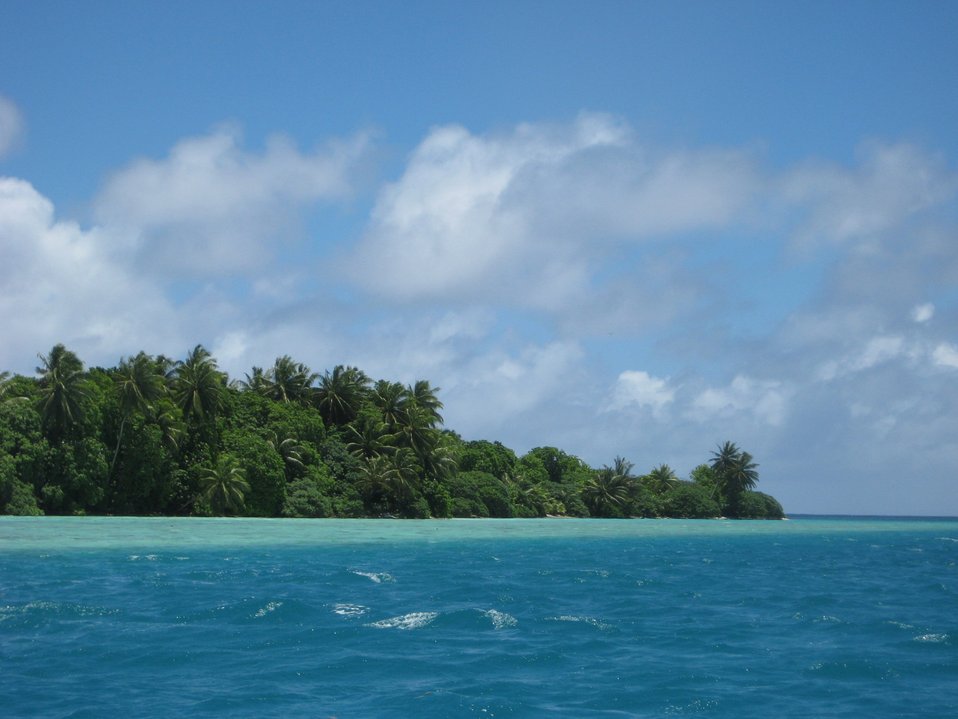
Vegetation including the ubiquitous palm trees of the tropical Pacific cover Palmyra Island and its associated offshore islets.